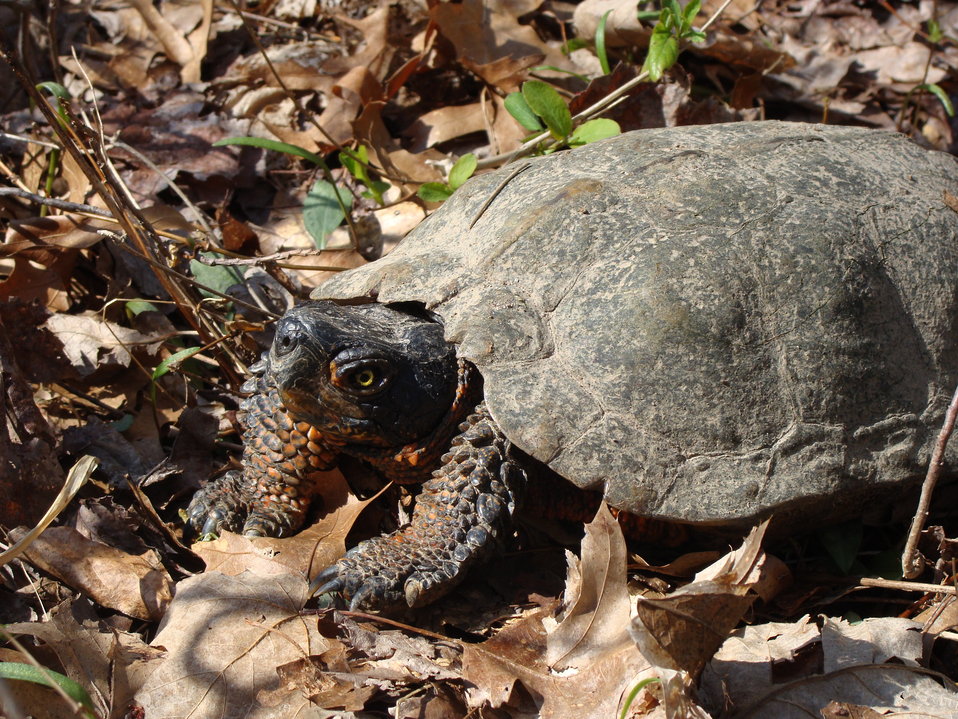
Wood Turtle

Very old adult Wood turtle Great Swamp National Wildlife Refuge